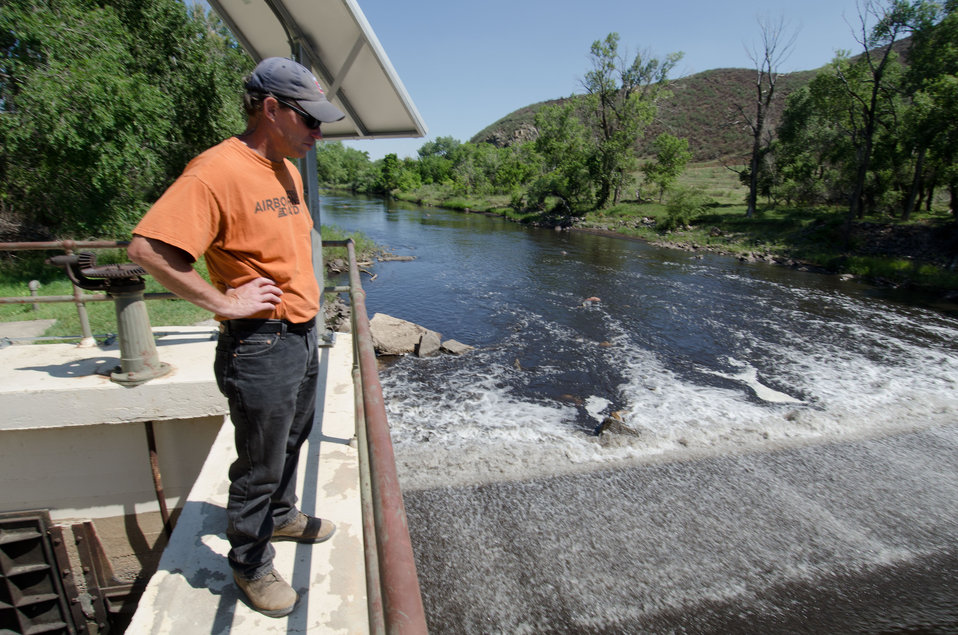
U.S. Department of Agriculture District Conservationist Todd Boldt peers down from a water control facility to see the effects upon the water, downstream of the Hewlett Gulch Fire, in the Poudre Canyon area, on Friday, July 20, 2012, near Fort Collins, Colorado. Unmitigated runoff have turned the water in this river from clear water to nearly black water heavily laden with ash, silt, and burnt debris that recent thunderstorms have already washed down from the mountainsides. When he dug down into the riverbanks, he found ash 18 inches below the surface, at the water’s edge. At its peak more than 400 firefighters were battling fires pushed by 50 mph winds. When the last embers were cooled, more than 12-square miles lay blacked at a cost of approximately 3.2 million dollars to fight. The aerial distribution of straw has successfully kept nearby Milton L. Seaman Reservoir clean for the drinking water of the City of Greeley. Forest Service lands receive straw, while private and other lands receive a seed mix and straw to promote ground cover plant growth on ash-covered lands. In total, 1,800 tons of straw will be applied during the 14-day operation. One quarter of the cost was paid by the City of Greeley and the U.S. Department of Agriculture funded the remainder.